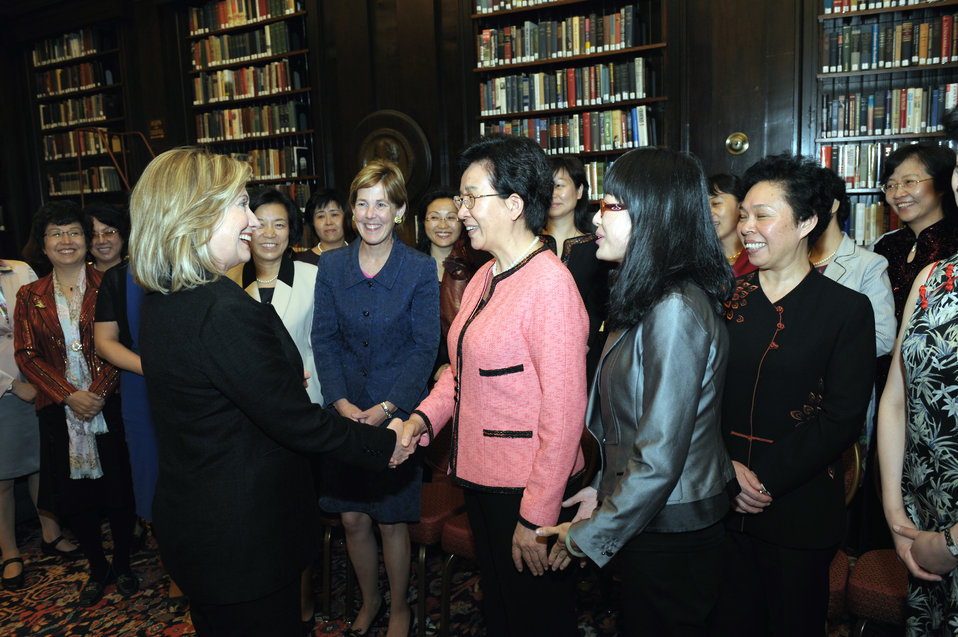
Secretary Clinton and Ambassador Verveer Meet With Participants in the Yale Chinese Women's Leadership Development Program

U.S. Secretary of State Hillary Rodham Clinton and Ambassador-at-Large for Global Women’s Issues Melanne Verveer meet with participants in the Yale Chinese Women’s Leadership Development Program, the first of several public-private partnerships formed under the auspices of the U.S.-China Women’s Leadership Exchange and Dialogue (Women-LEAD), at the Metropolitan Club in Washington, D.C., on May 10, 2011.